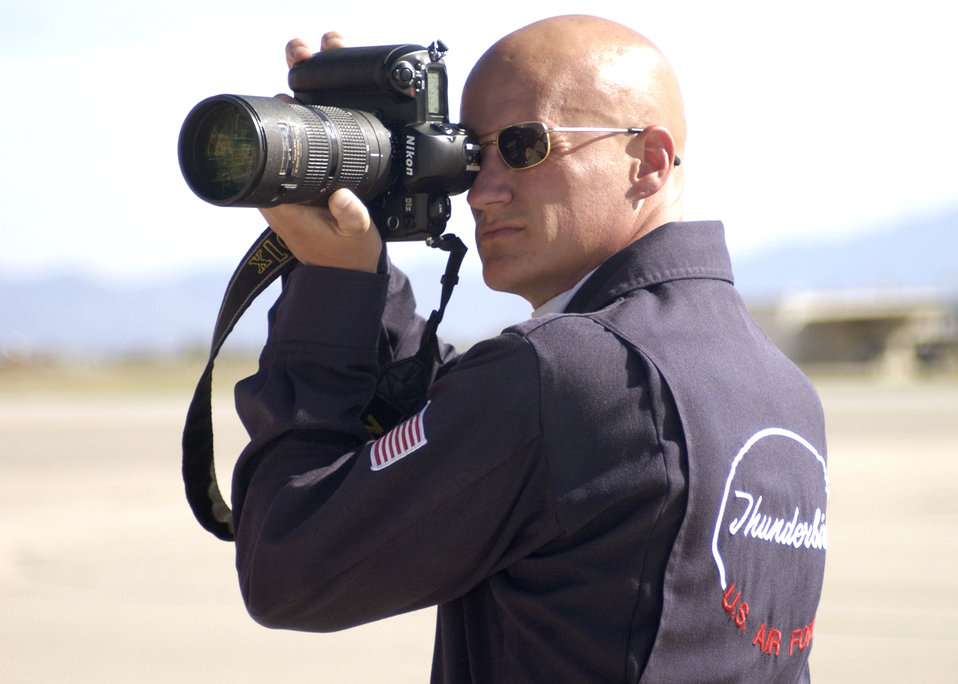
Thunderbirds

DAVIS-MONTHAN AIR FORCE BASE, Ariz. -- Tech. Sgt. Sean White takes photos of the Thunderbirds performance at the Aerospace and Arizona days here April 2. He is a photographer assigned to the Thunderbirds team at Nellis Air Force Base, Nev.